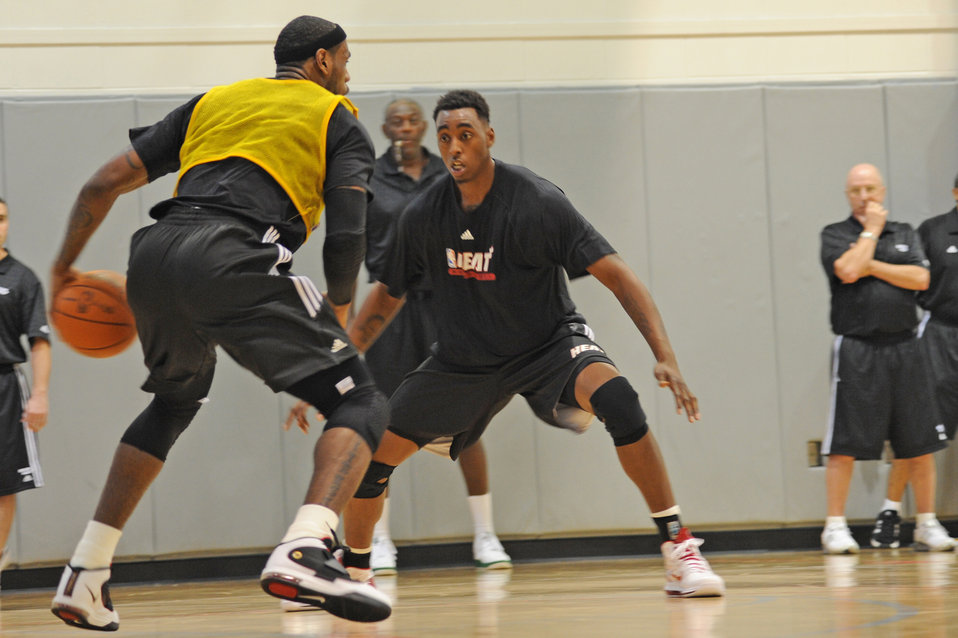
Miami Heat at Hurlburt

NBA player LeBron James (left) prepares to take the basketball around the defense of teammate Mickell Gladness during a preseason practice session Sept. 28, 2010, at the Aderholt Fitness Center at Hurlburt Field, Fla. The Miami Heat used the fitness center for their week-long training camp. James is a forward and Gladness is a center for the Heat.